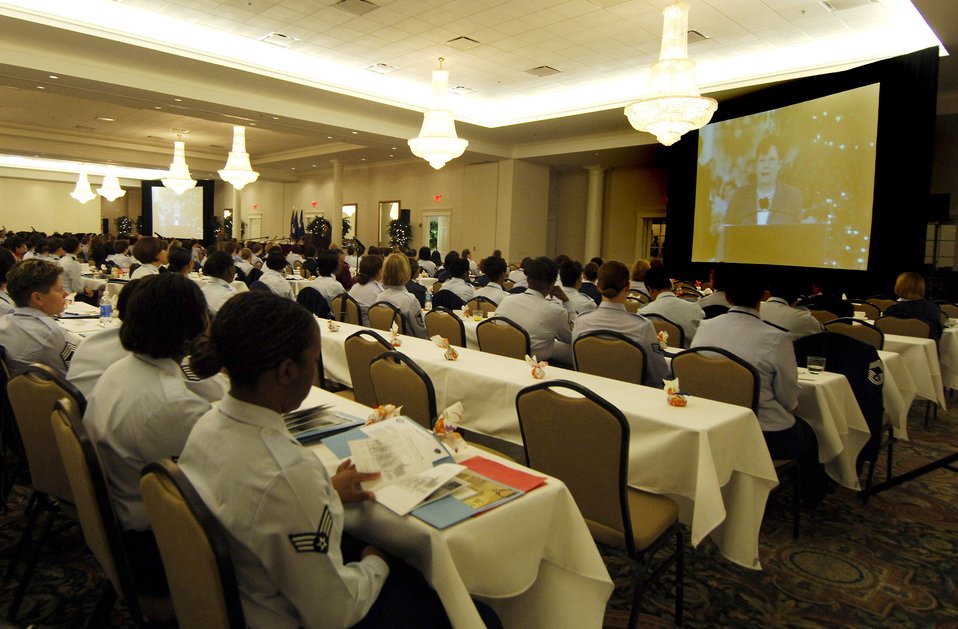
Air Force Women's Training Symposium

Air Force women of all ranks meet in Springfield, Va., for the 2007 Air Force Heritage to Horizon Women's Training Symposium on Oct. 31.